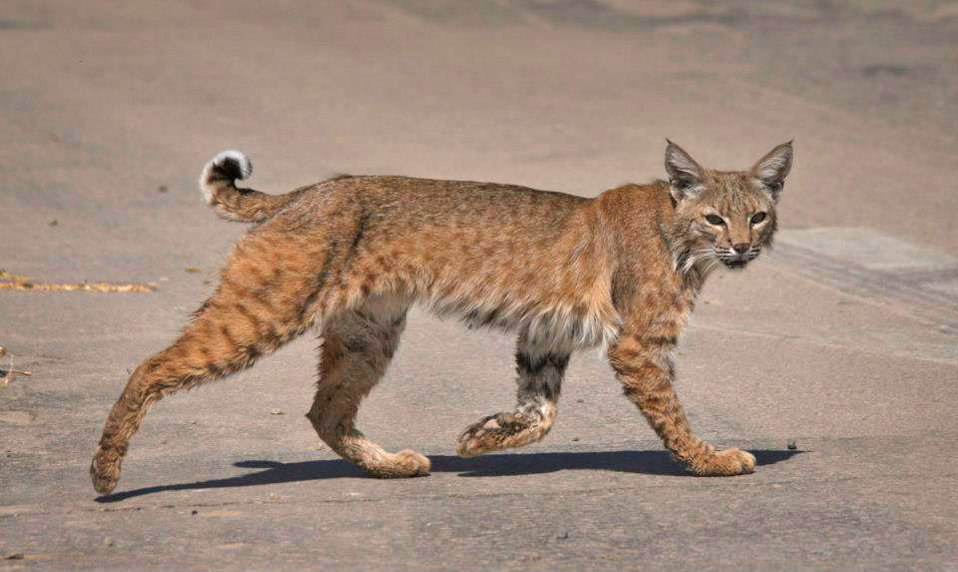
Bobcat at Sonny Bono NWR-5

This photo was taken in the morning very close to the Sonny Bono National Wildlife Refuge visitor center. (Photo by Mark Stewart/USFWS)

From the photographer: 'We have a lot of cover, a small pond and lots of rabbits. We have at least one family of Bobcats and I am expecting to see their kittens soon. They are used to people, but I use a 500 mm lens so as not to interfere with their normal activities.' -- Mark Stewart